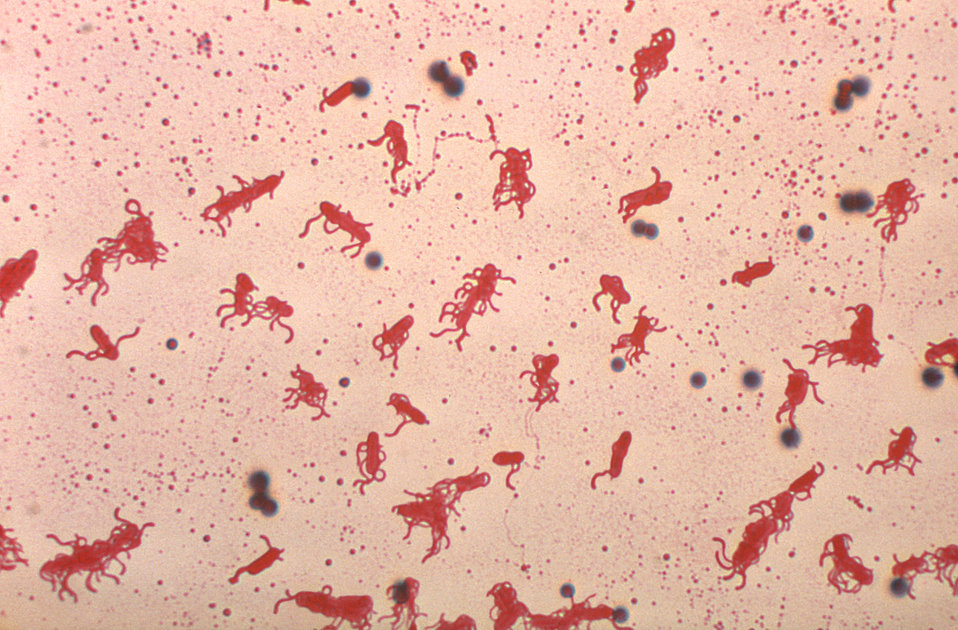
Bacillus alvei. Leifson flagella stain.